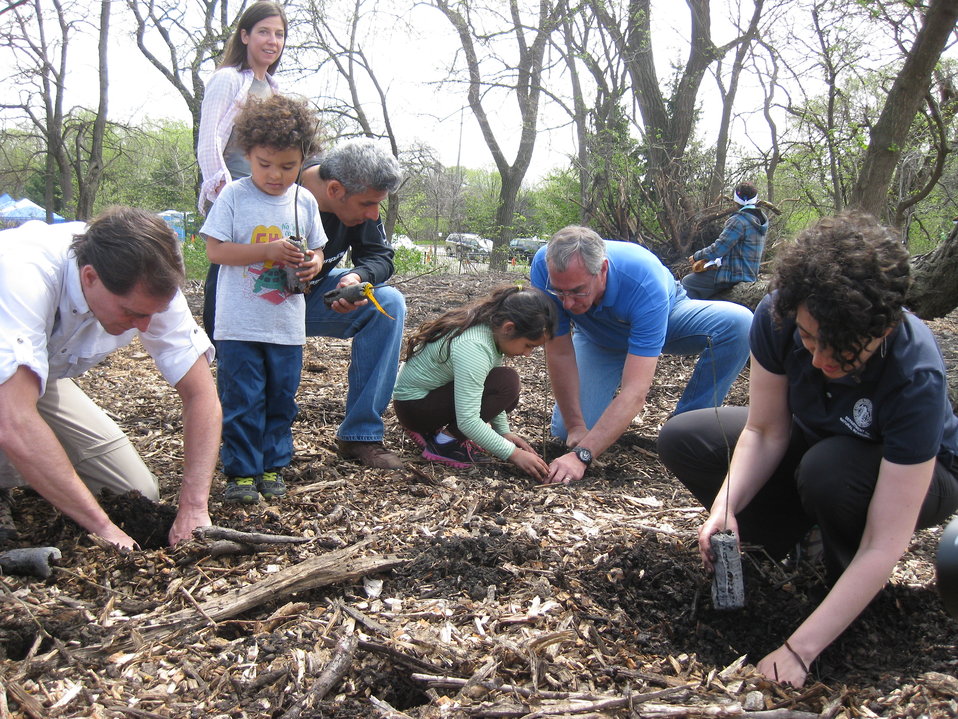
Dan Ashe and Tom Melius Plant Seedlings with Chicago participants

Chicago Park District Burnham Corridor Community Planting Day
May 10, 2014
Photo by USFWS; Louise Clemency